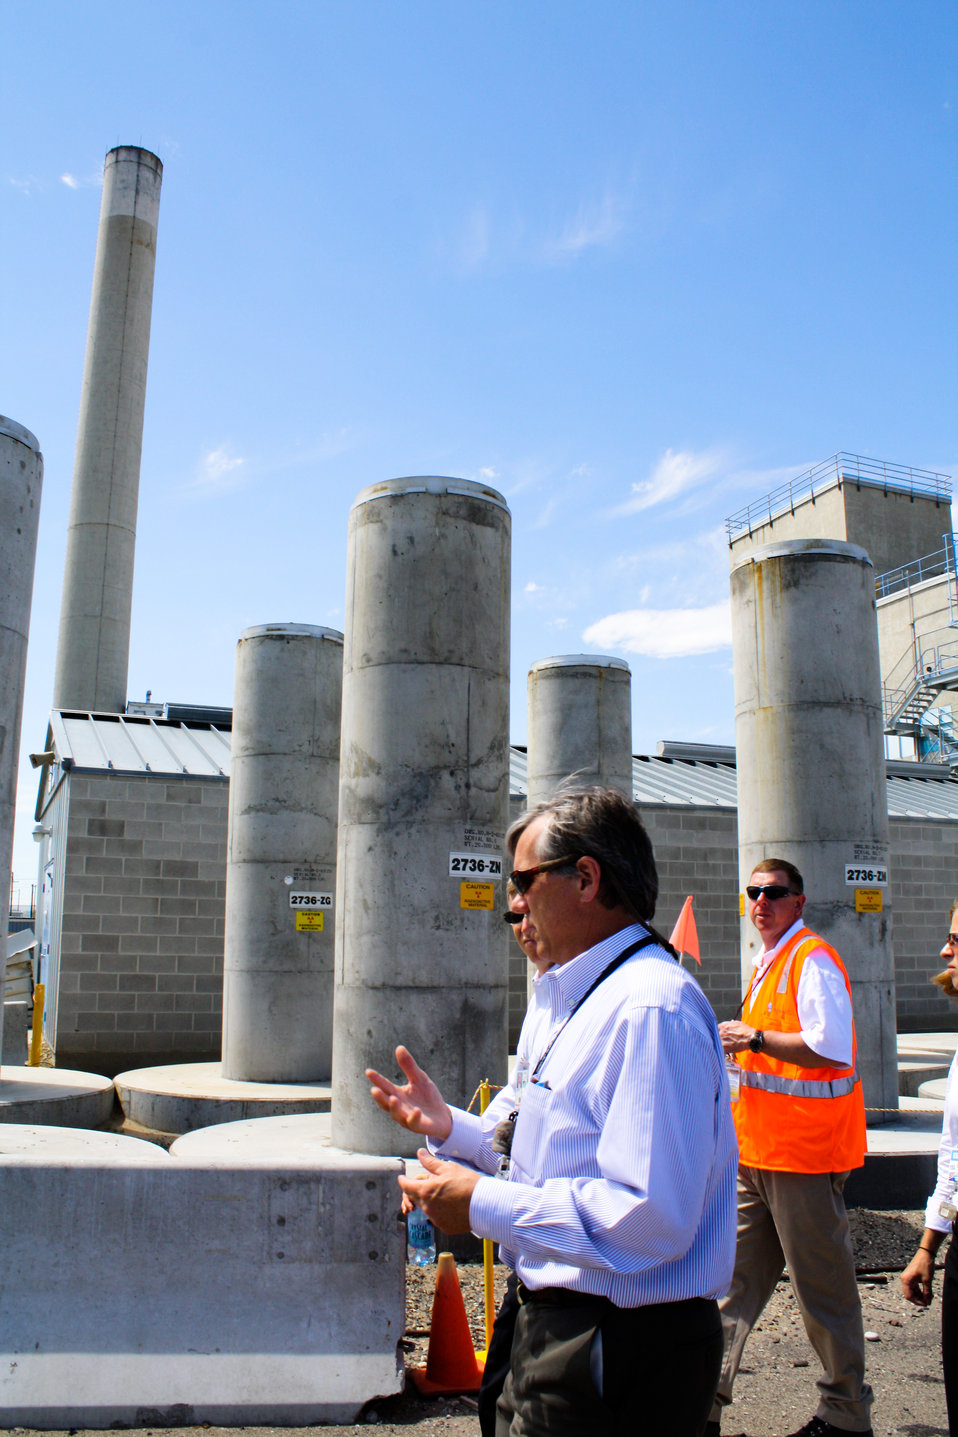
Poneman Vit Plant Visit 06-14-10-164